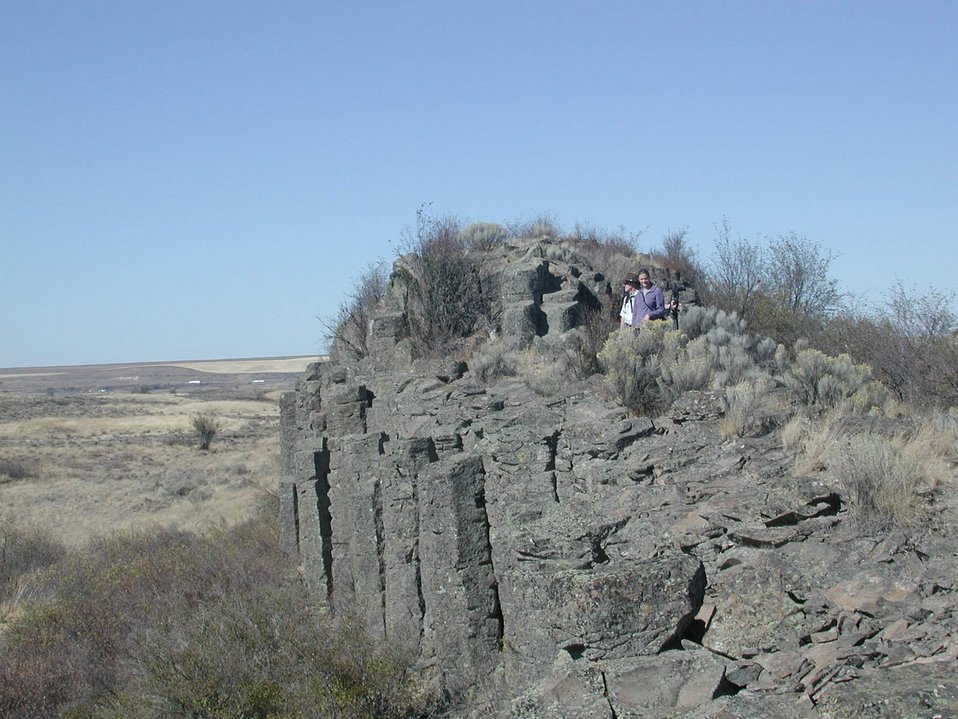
Pulblic Lands Day tour group show the scale of the columnar basalt.